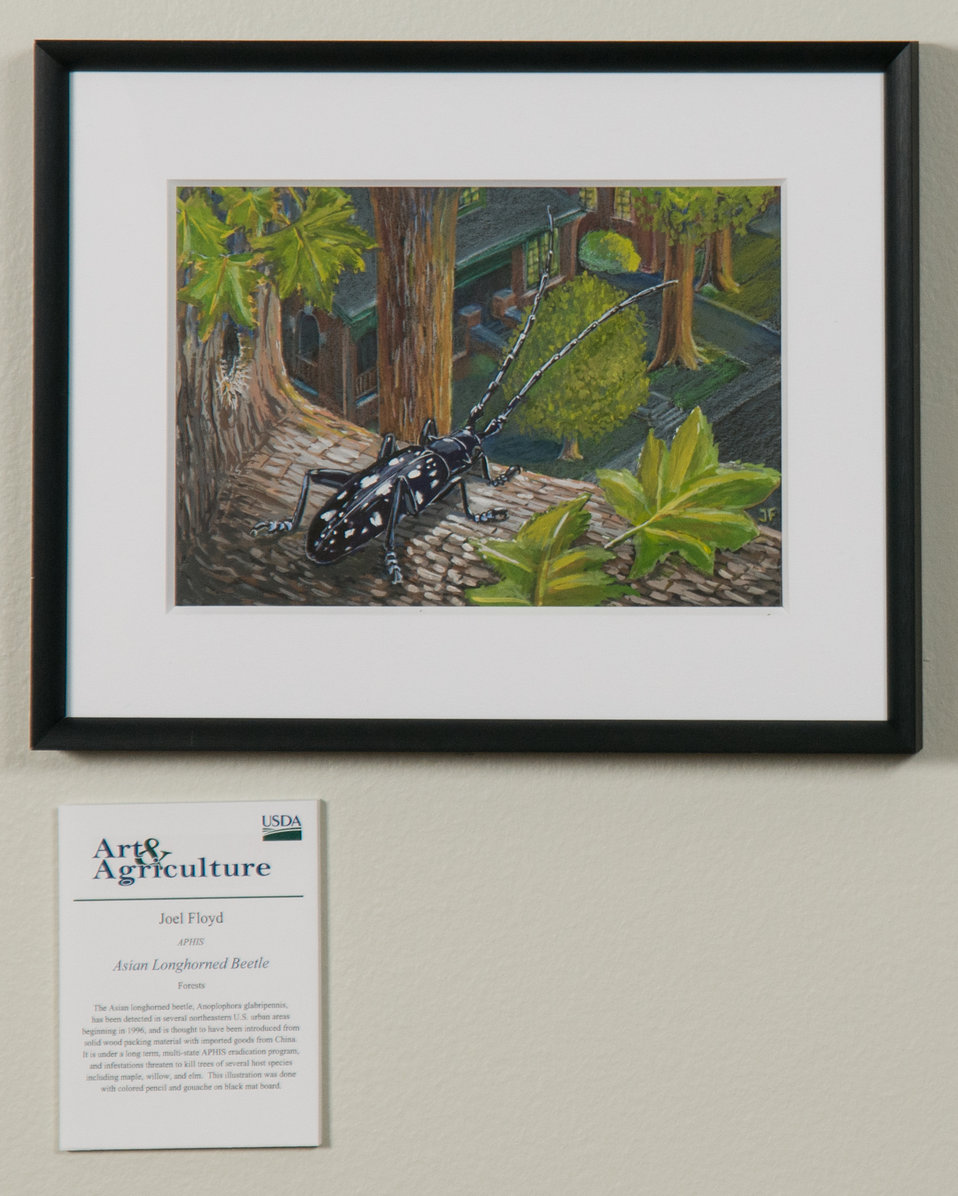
Online Viewer's Choice entries of the 2013 Art & Agriculture, Tuesday, July 9, 2013, in the South Building, Washington, D.C. Themes were expressed by employees from across the department and the contest was open to full-time and part-time USDA employees. Winning artwork will be displayed till the end of the year. U.S. Artistic expression is a creative outlet that is vital for an individual to grow and develop.